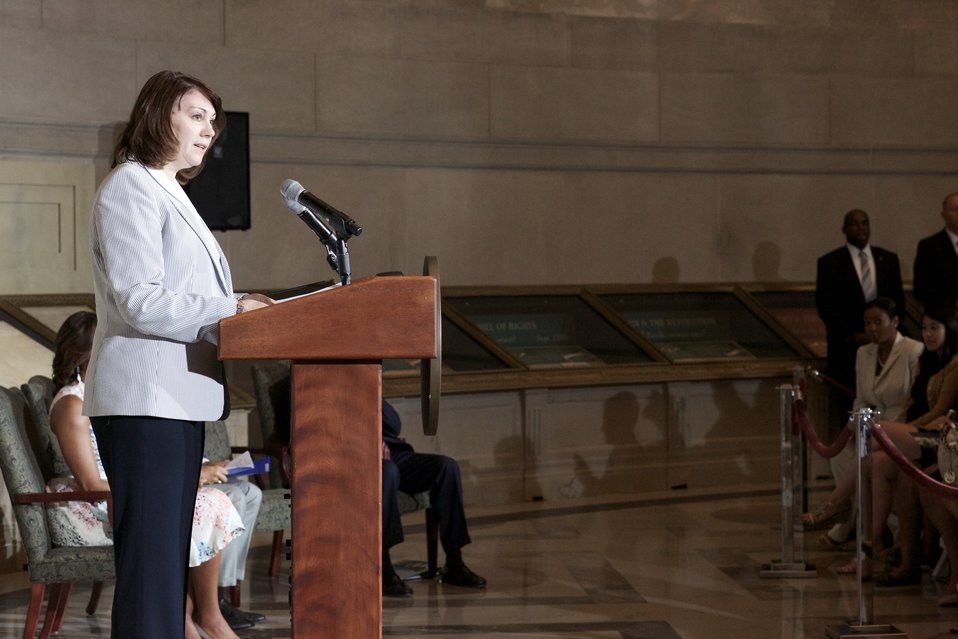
Naturalization Ceremony with Michelle Obama